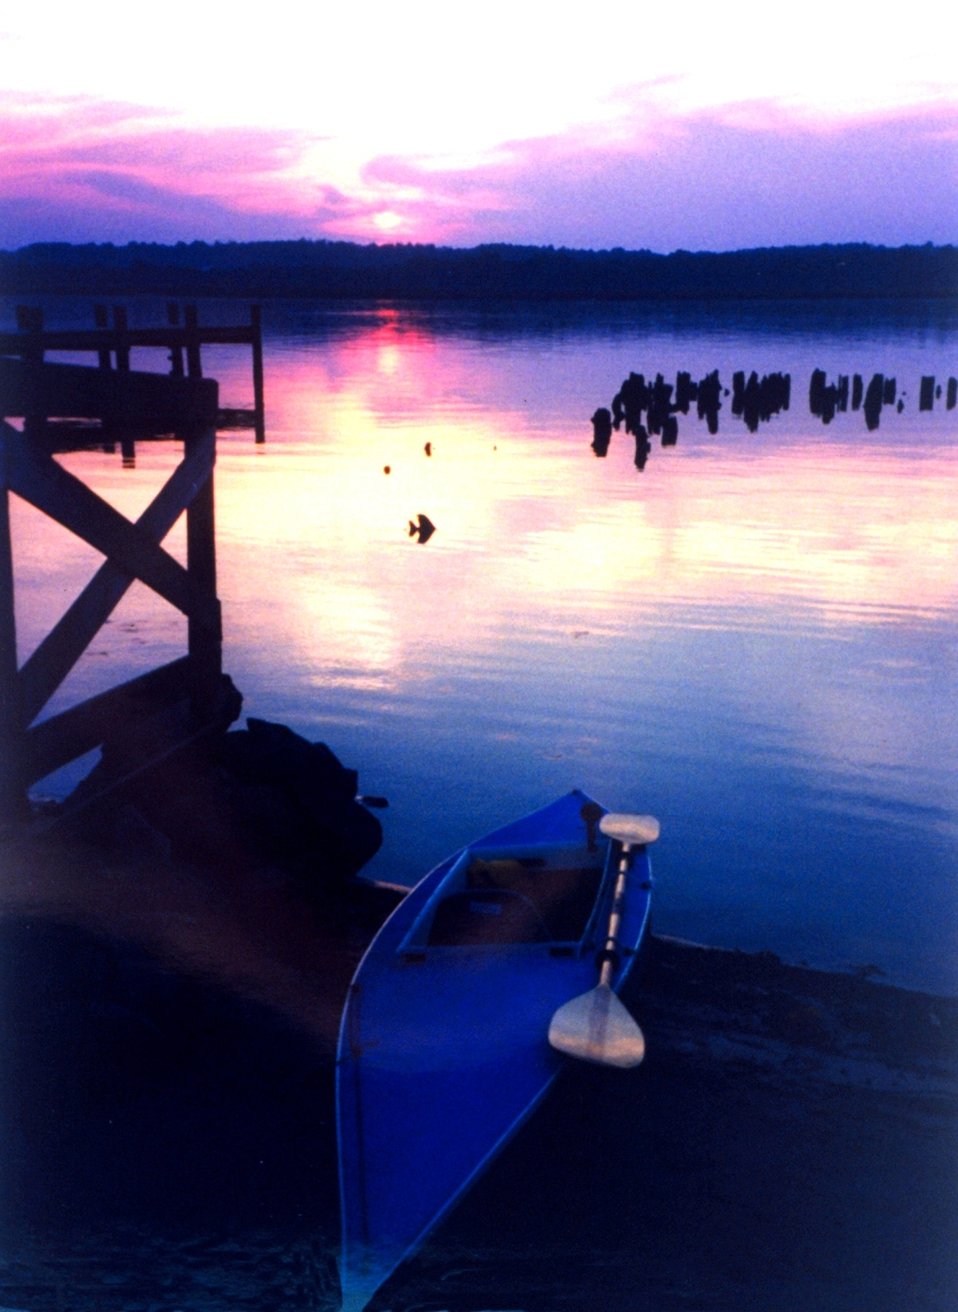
Kayak sunset along the Patuxent River.